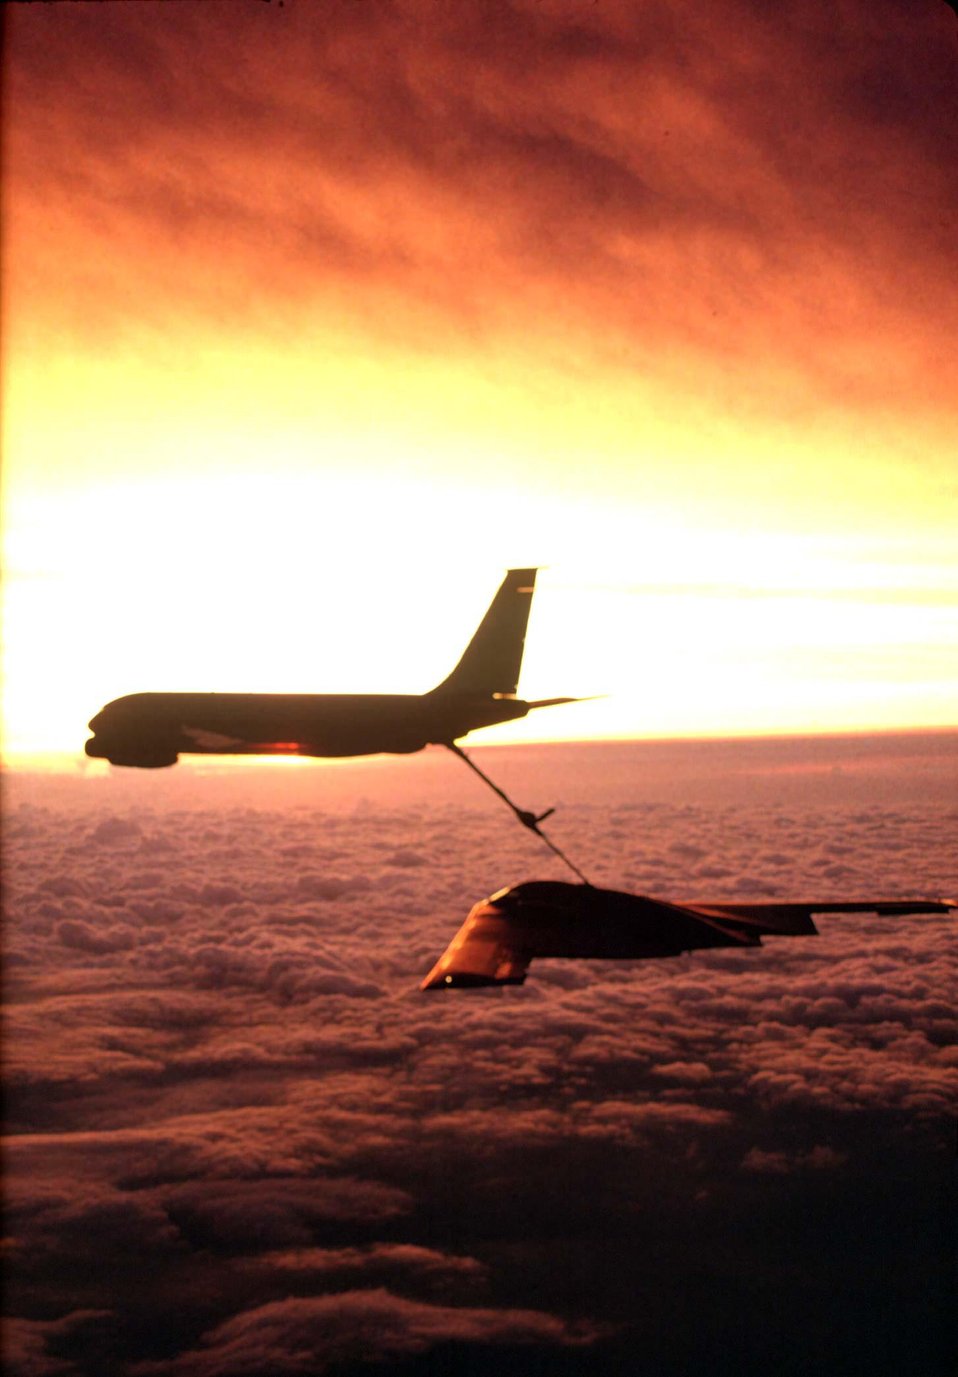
Sunset refueling

FILE PHOTO -- A KC-135 Stratotanker from the 22nd Air Refueling Wing, McConnell Air Force Base, Kan., refuels a B-2 Spirit from the 509th Bomb Wing, Whiteman Air Force Base, Mo. The 22nd ARW's primary mission is to provide Global Reach by conducting air refueling and airlift where and when needed.